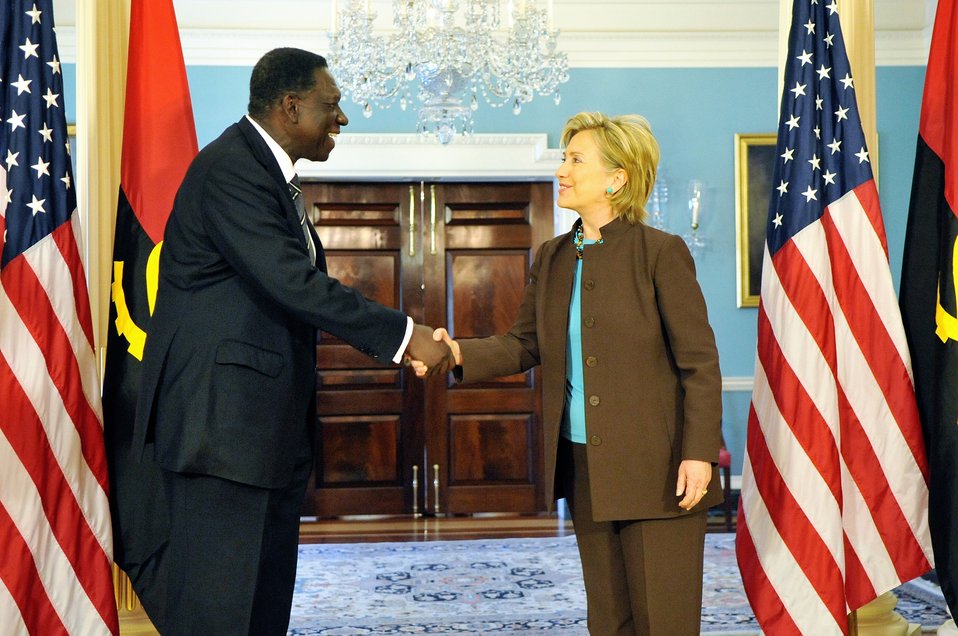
Secretary Clinton Meets With Angolan Minister of External Affairs

U.S. Secretary of State Hillary Rodham Clinton hosts a bilateral meeting with Angolan Minister of External Affairs Ansuncao Afonso dos Anjos in the Treaty Room of the U.S. Department of State in Washington, DC May 21, 2009.